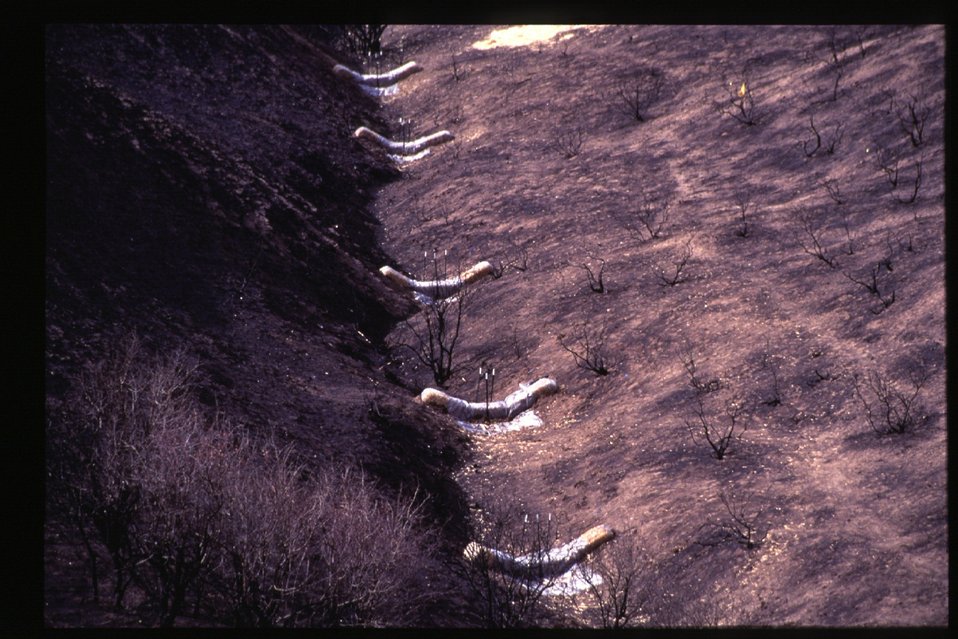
Fire 8th Street Fire Rehab Straw wattles Four Rivers Field Office LSRD Lower Snake River District